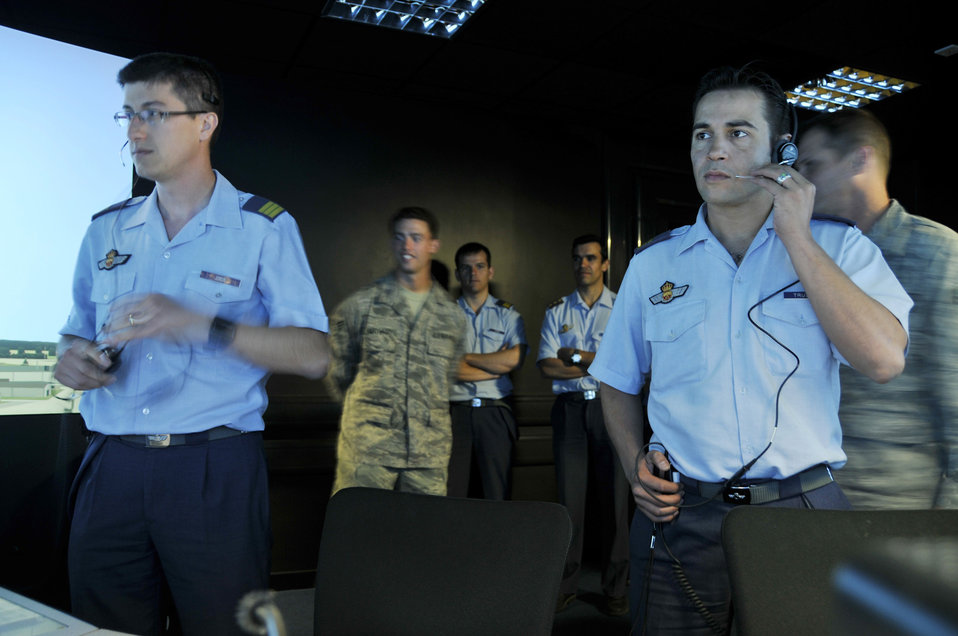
Lakenheath air traffic controllers pick up NATO training mission

Spanish Sgts. Ignacio Jorda and Rafael Trujillo receive training from the 48th Operations Support Squadron air traffic controllers at the tower simulator July 10 at Royal Air Force Lakenheath, England. The Spanish controllers became familiar with American phraseology and procedures prior to their upcoming deployment in support of NATO operations. Sergeants Jorda and Trujillo are Spanish air traffic controllers.